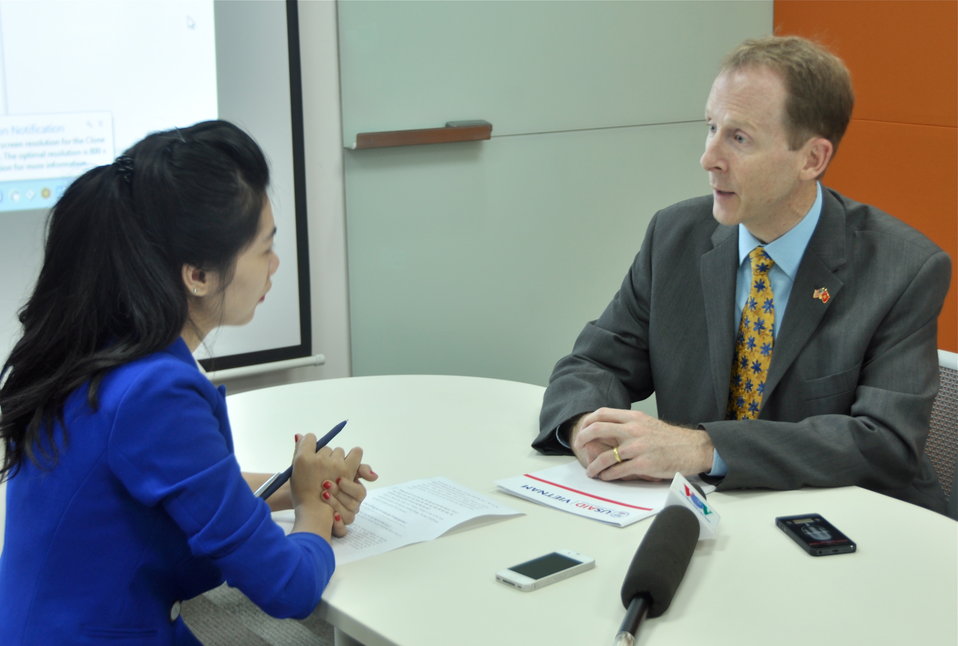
USAID Mission Director Joakim Parker answers interview questions from Voice of Vietnam (VOV) Television.

Hanoi, November 13, 2013.